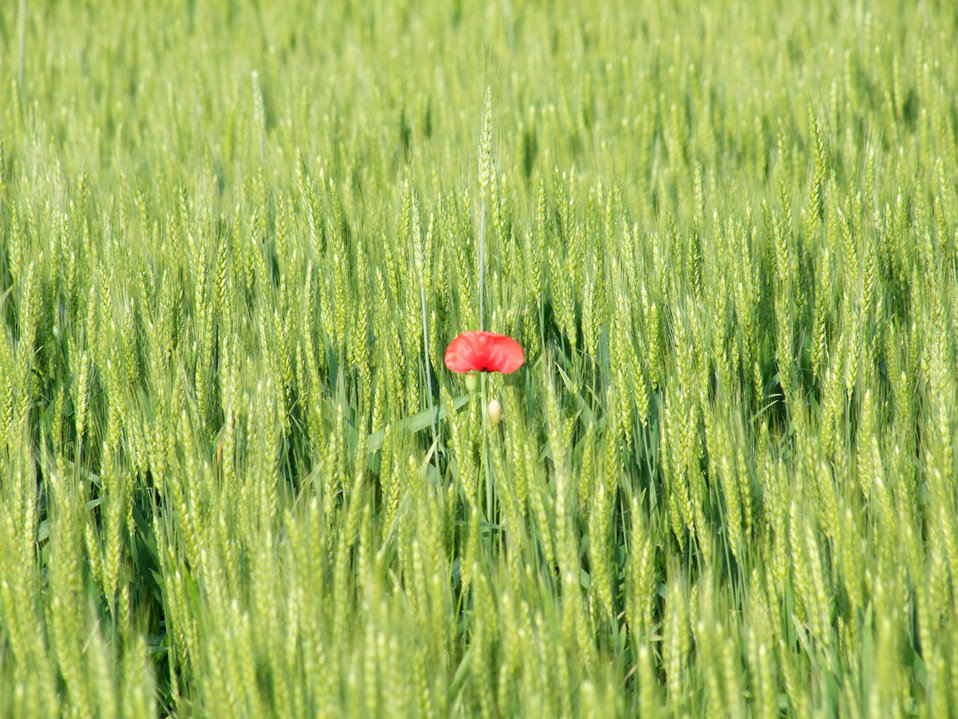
Red beauty

Lonely in the middle of the wheast field.